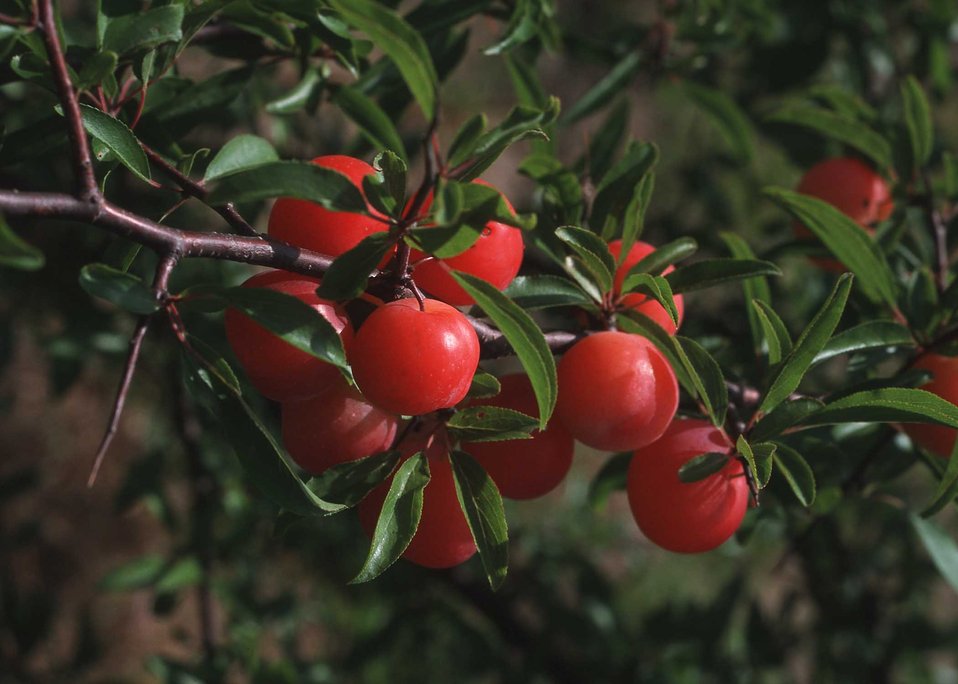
Fruit bearing trees and plants provide an excellent food source for many different wildlife species.